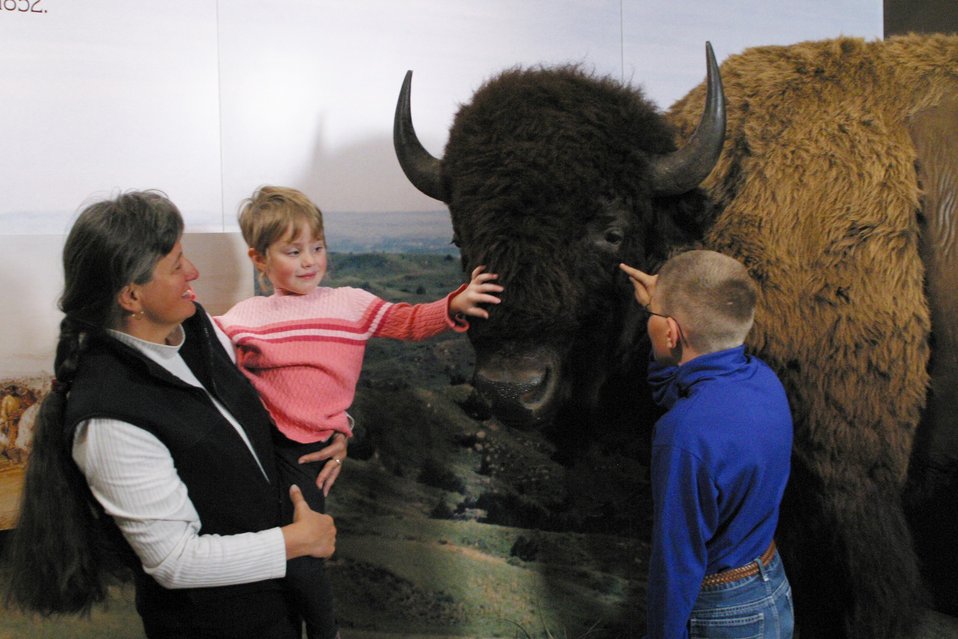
Bison once roamed the plains in great numbers. Visitors learn about the role of Bison and how they helped pioneers along the Oegon Trail.